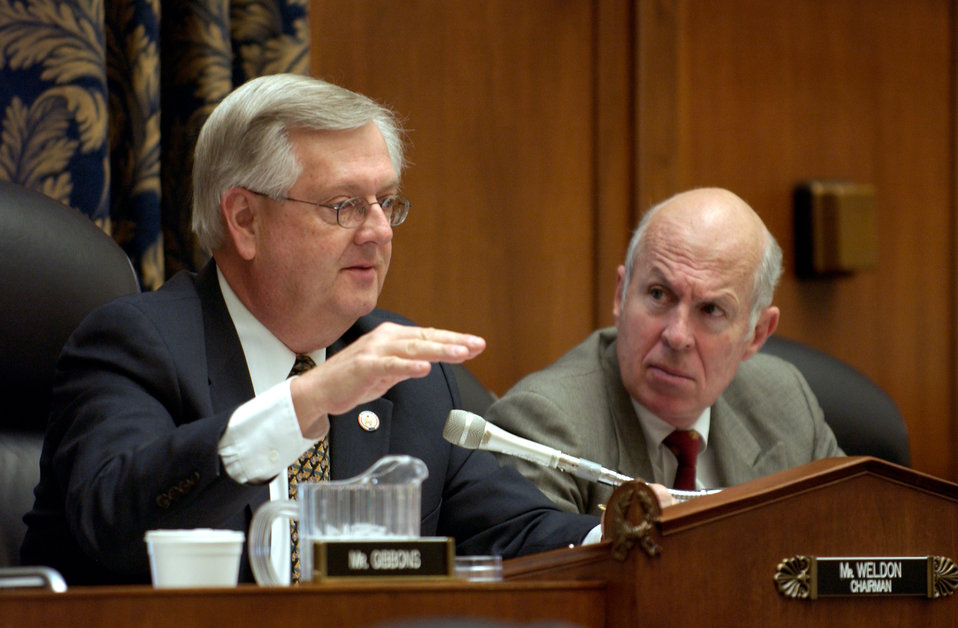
JSF under attack on Capitol Hill

WASHINGTON -- Subcommittee chairman Rep. Curt Weldon (left) asks questions about the state of the F/A-22 and Joint Strike Fighter programs during a hearing of the House Armed Services Committee subcommittee on tactical air and land forces March 25.